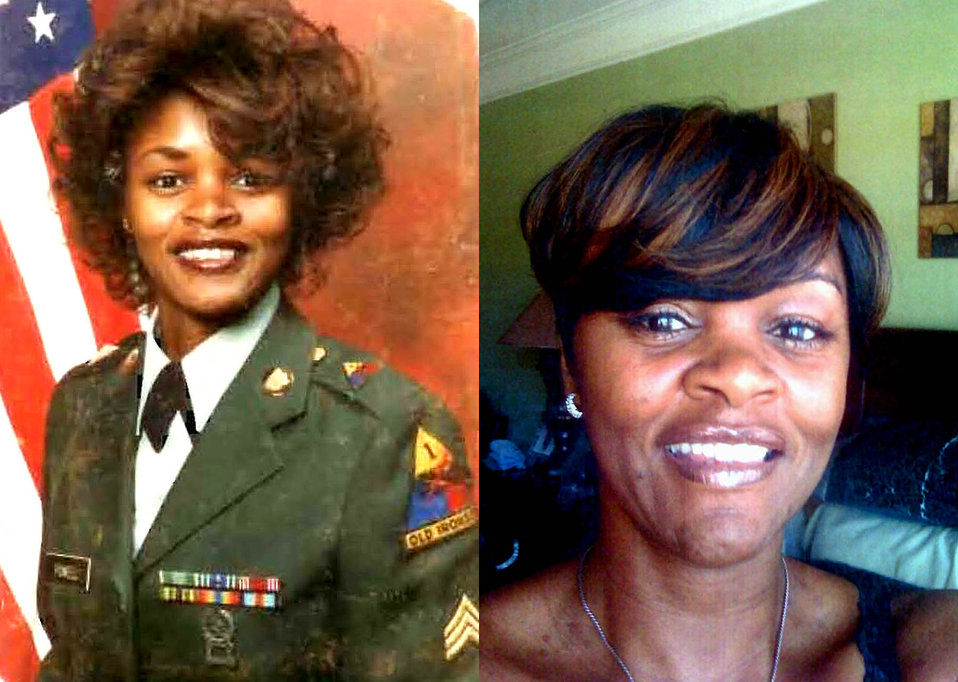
Mary Powell -- Southeast Region

Mary Powell.
Mary Powell, Grants Program Specialist, served honorably in the U.S. Army 1982- 1990. She was stationed in Nurnberg, Germany, Chunchon, Korea, Ft. Dix, N.J., Ft. Jackson, S.C., Fort Sill, OK, and Ft. Stewart, GA. .
.
She joined the Army as a Administrative Specialist and was promoted to Mailroom Supervisor. She has been married for 26 1/2 years to retired U.S. Army 1st Sergeant L. Powell. They have three children, two having served in U.S. Air Force. One is still on active duty at Eglin Air Force Base, FL. Mary has been in Wildlife Sport Fish Restoration for 11 years.